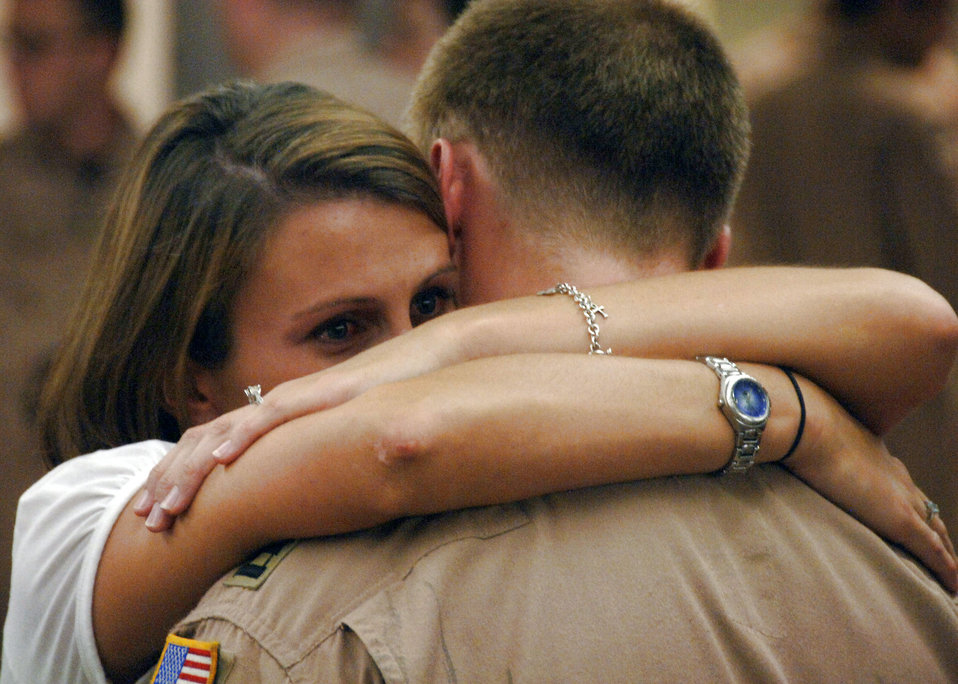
Charleston Airmen deploy to support war on terrorism

Fianc? Jessica McDonnell embraces Capt. Alexander Lammi prior to the 15th Airlift Squadron's departure Aug. 27 at Charleston Air Force Base, S.C. Members from the 15th AS are deploying to Southwest Asia as part of operations Enduring Freedom and Iraqi Freedom. Captain Lammi is a pilot with the 15th AS.